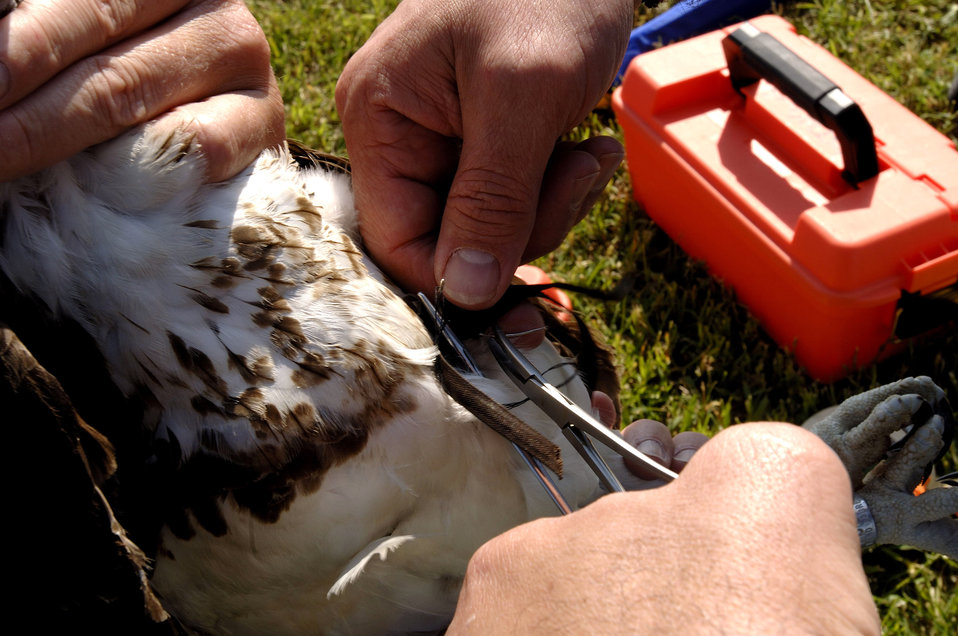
Osprey tracking

Brian Dorr of the U.S. Department of Agriculture holds an osprey as Mark Martell of the Minnesota Audubon Society fits it with a tracking device at Langley Air Force Base, Va., on Wednesday, May 17, 2006. The department is collecting, tagging and tracking the birds to reduce conflicts with base aircraft.